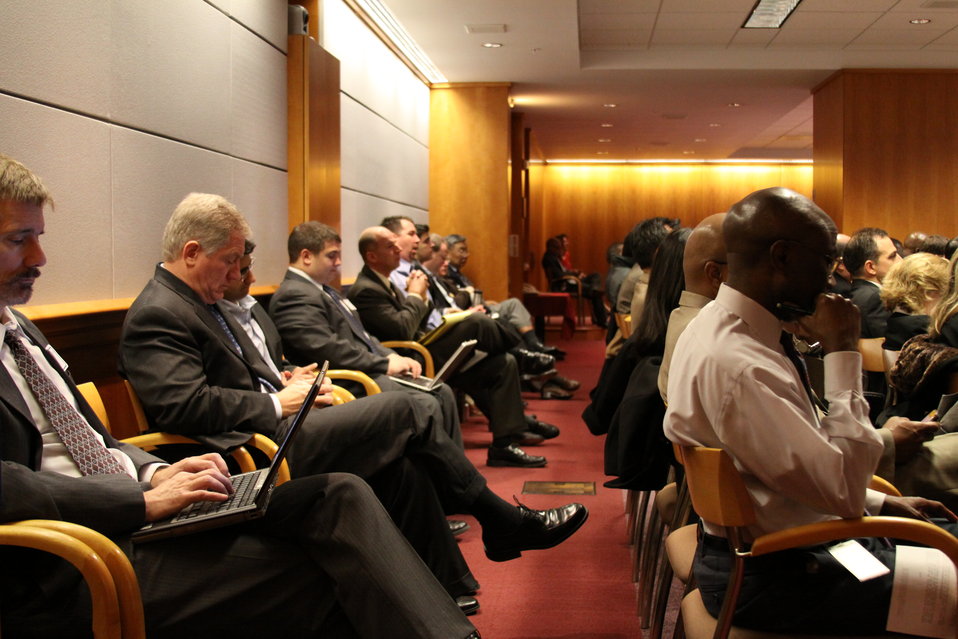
December Commission Meeting